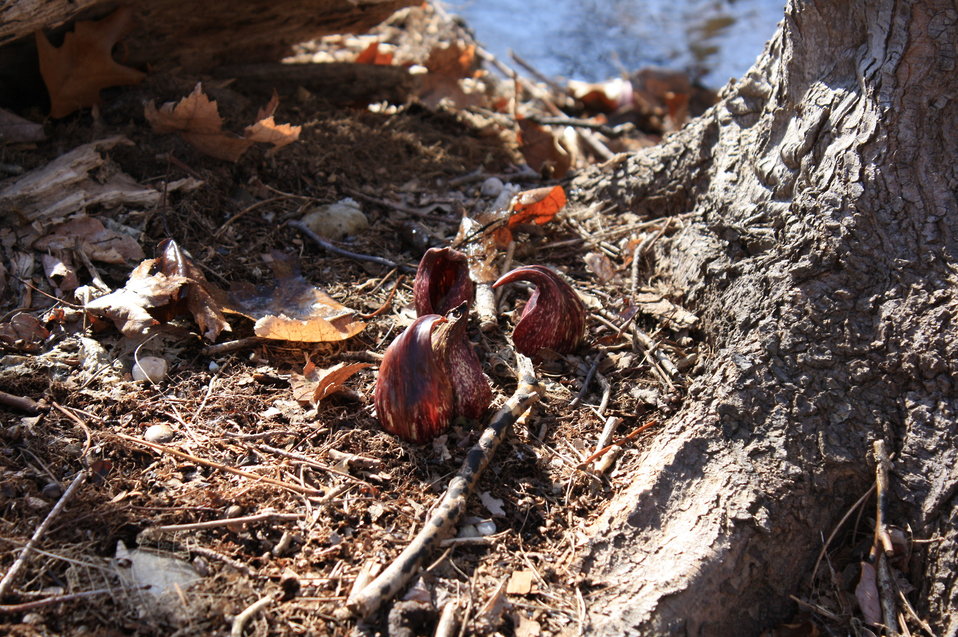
Skunk Cabbage

Photographed at Wertheim National Wildlife Refuge.